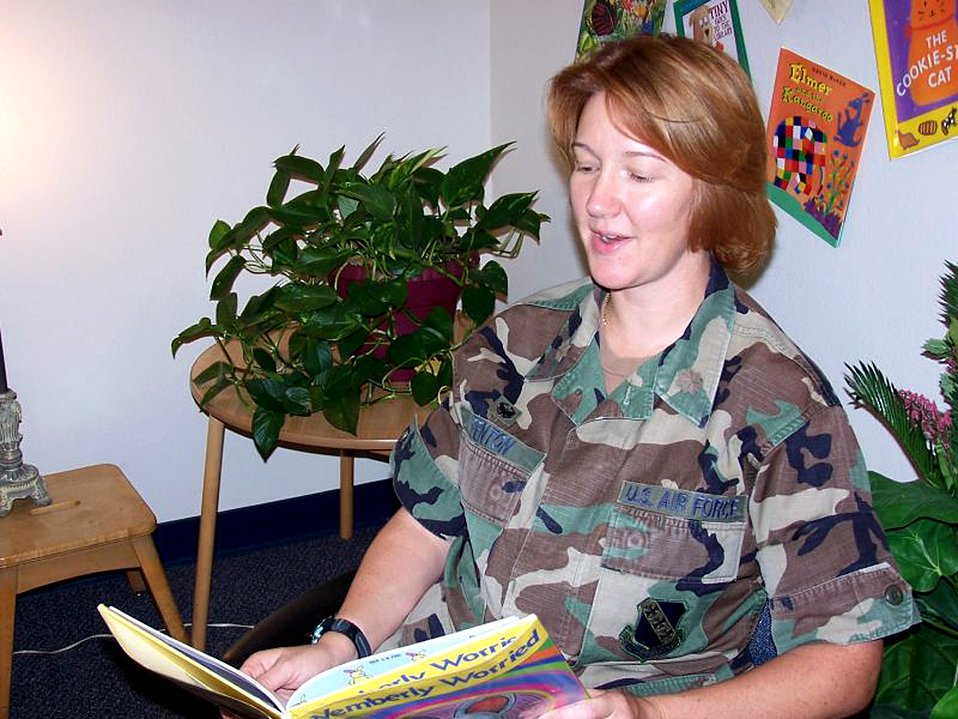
Library service records messages for deployed airmen

DYESS AIR FORCE BASE, Texas -- Maj. Anne Marie Fenton, 7th Mission Support Squadron commander here, records herself reading a bedtime story for her two children before deploying Sept. 8. The base library here offers a free video service that lets deploying Airmen record messages that their loved ones can watch on DVD or video tape while he or she is deployed.